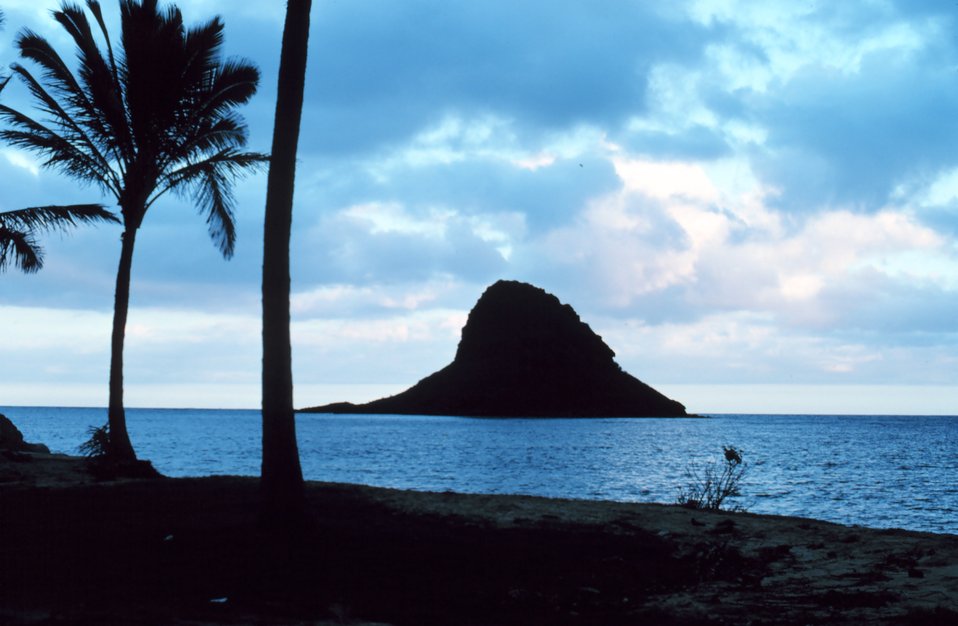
Mokolii Island, known locally as Chinaman's Hat, just north of Kaneohe Bay